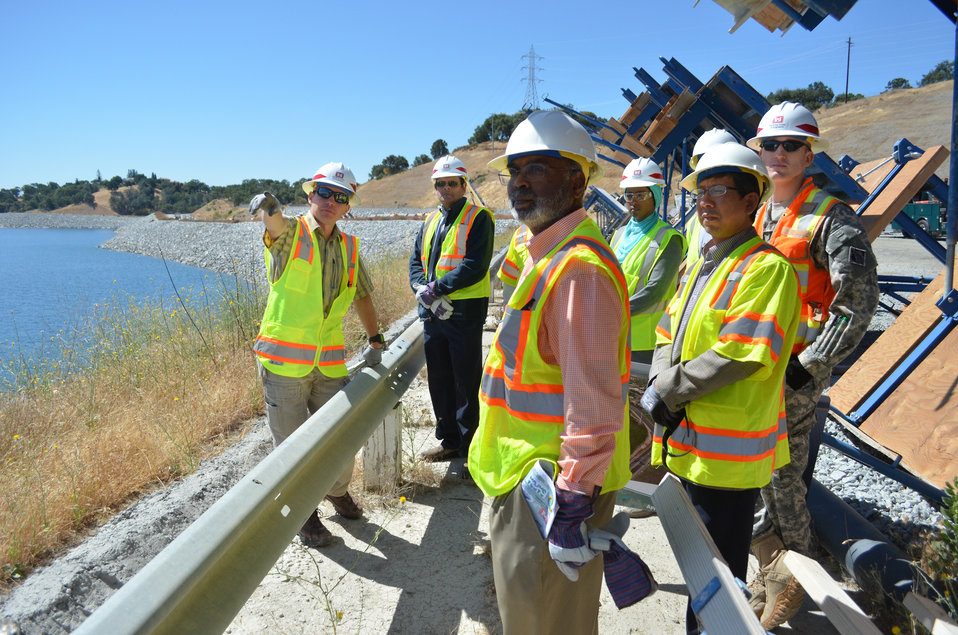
Brian Szydlik leads World Bank tour of Folsom Dam auxiliary spillway project

Brian Szydlik (left), chief of contract administration for the U.S. Army Corps of Engineers Sacramento District's Folsom Dam auxiliary spillway project, leads a group of representatives from the World Bank on a tour of the spillway's construction site June 19, 2013, in Folsom, Calif. The bank is interested in learning about the latest technology in urban flood control so they can make informed decisions when funding projects.